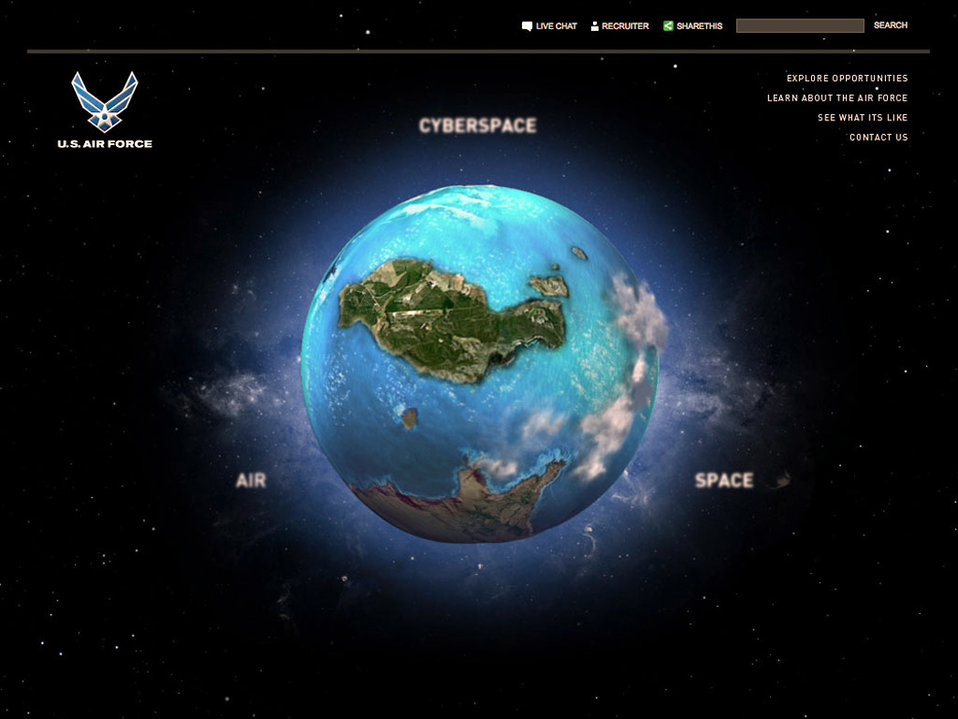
Air Force recruiting Web site redesign launched

Incorporating the latest Internet technologies while reflecting the way ahead for the service, Air Force Recruiting Service officials launched their redesigned Web site Dec. 15 at airforce.com.